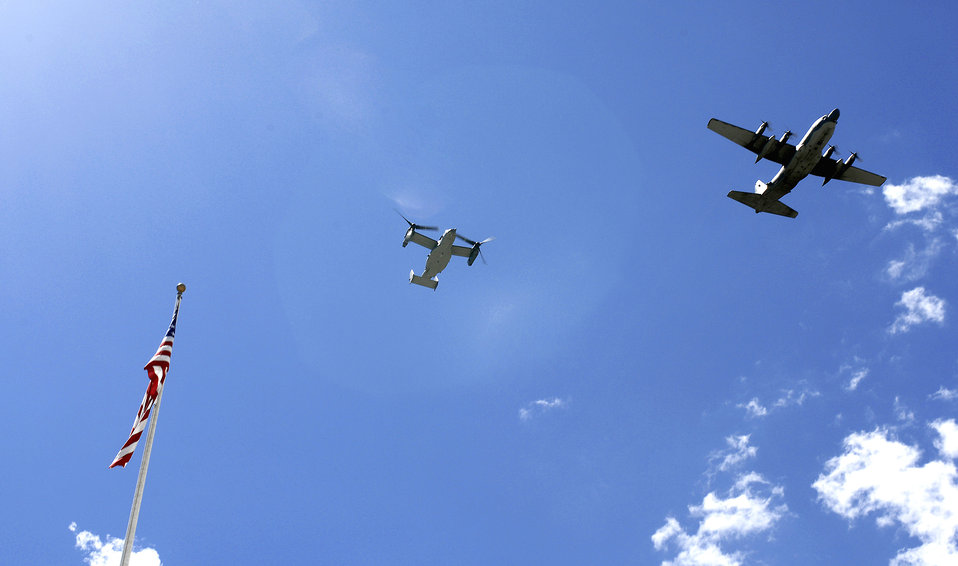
Osprey comes for a visit

A CV-22 Osprey trails a C-130 Hercules as they fly over the U.S. Air Force Academy May 11. Cadets in the Department of Aeronautical Engineering's High-Performance Computing Research Center contributed to making this aircraft an operational reality through their research in computational fluid dynamics.